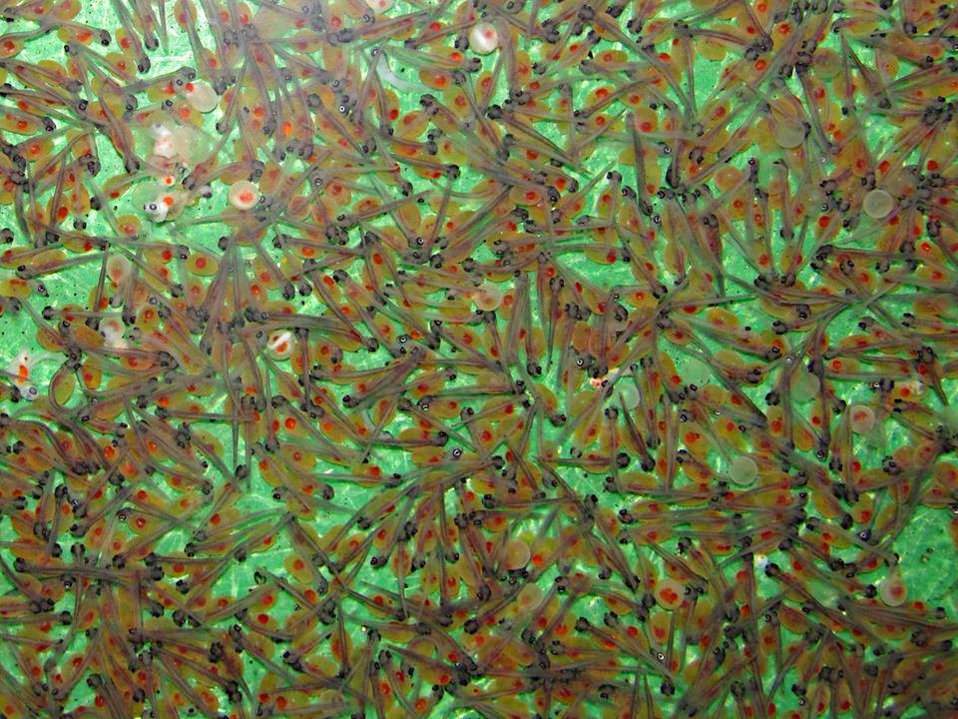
Newborns

All of our trout have hatched and are about the length of your fingernail! These guys will live off of their yolk sac for about a week before they are ready for feed.